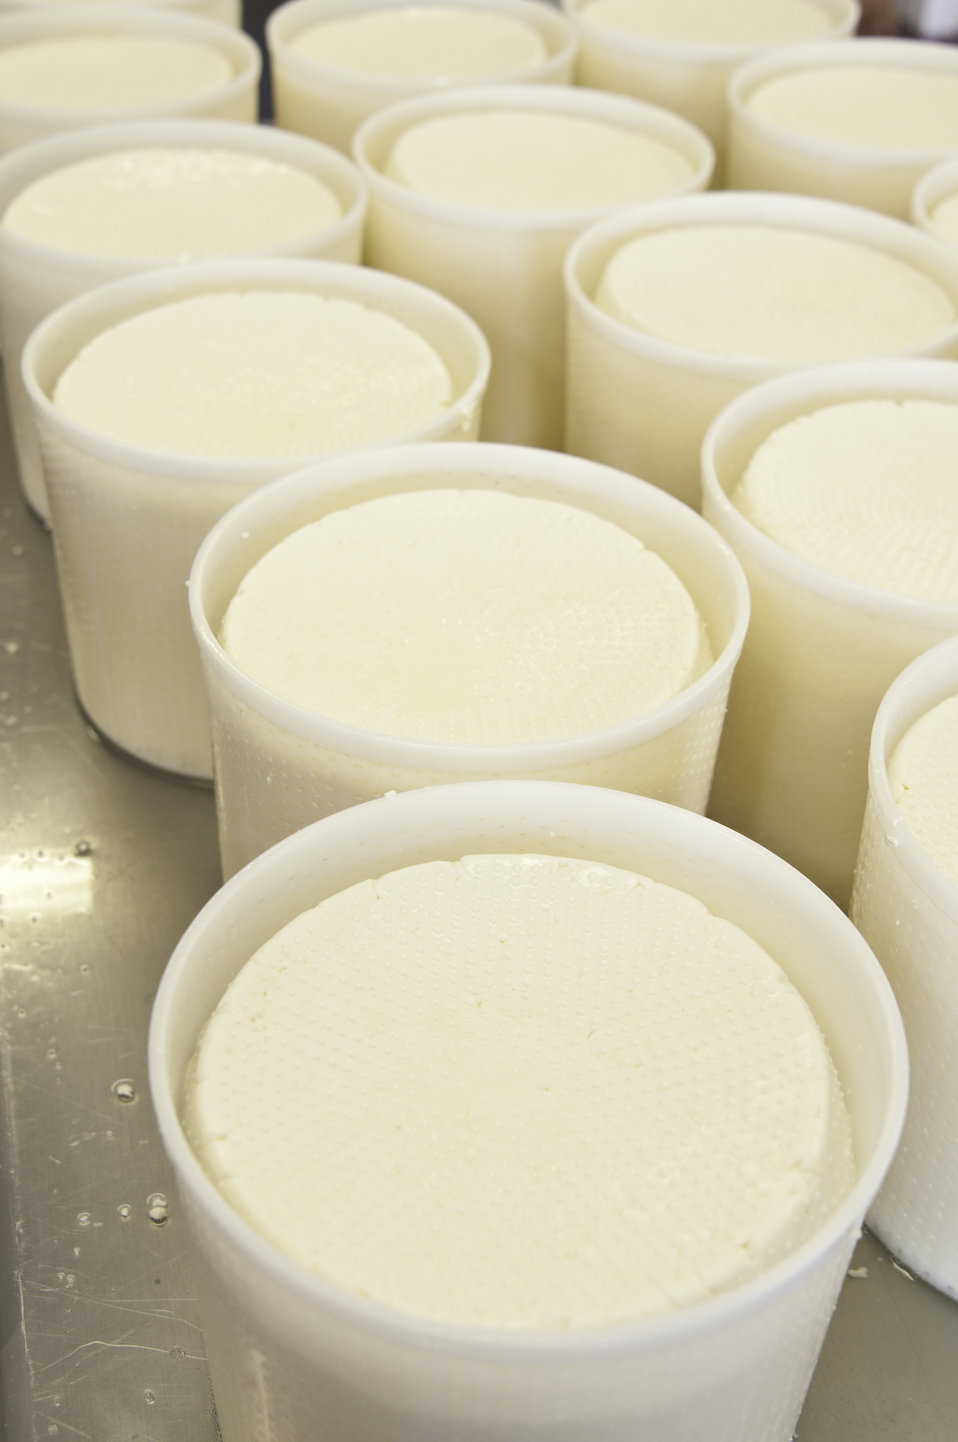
Milk curd in the hooping process at Chapel’s Country Creamery in Easton, MD, the curd will drain in the cheese hoops for 24 hours before being turned during the process until the whey has drained. The cheese is then aged 60 days or longer. The dairy’s Chapelle, Talbot Reserve and Bay Blue are placed in a climate-controlled cave, which gives the cheese its unique flavor. The cave-aged cheeses develop their own natural rind.